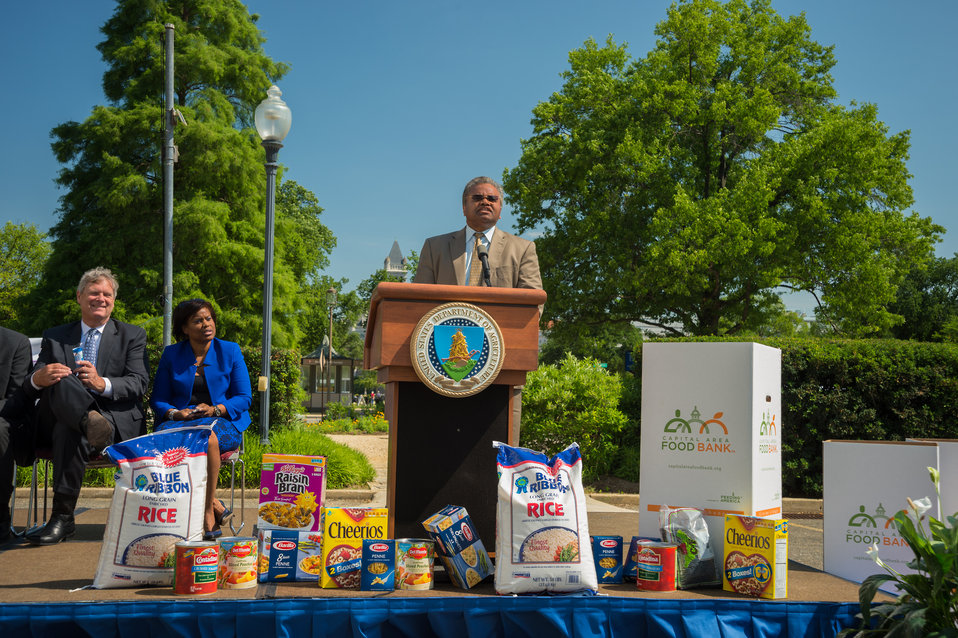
Mathy Stanislaus, Assistant Administrator for the Office of Solid Waste and Emergency Response, Environmental Protection Agency (EPA) accepted the challenge of friendly competition during the 2014 National Feds Feed Families Kick-Off at the United States Department of Agriculture’s (USDA’s) People’s Garden in Washington, DC, Mon. Jun. 2, 2014. The theme of this year’s event is, “Help Knock Out Hunger.” The U.S. Department of Agriculture will lead the campaign with the support of the Chief Human Capital Officers Council and other agency partners, which officially begins on June 1 and will run through August 27, 2014. On stage behind Ms. Roman are Agriculture Secretary Tom Vilsack and Karen Comfort, National Program Manager, Feds Feed Families.